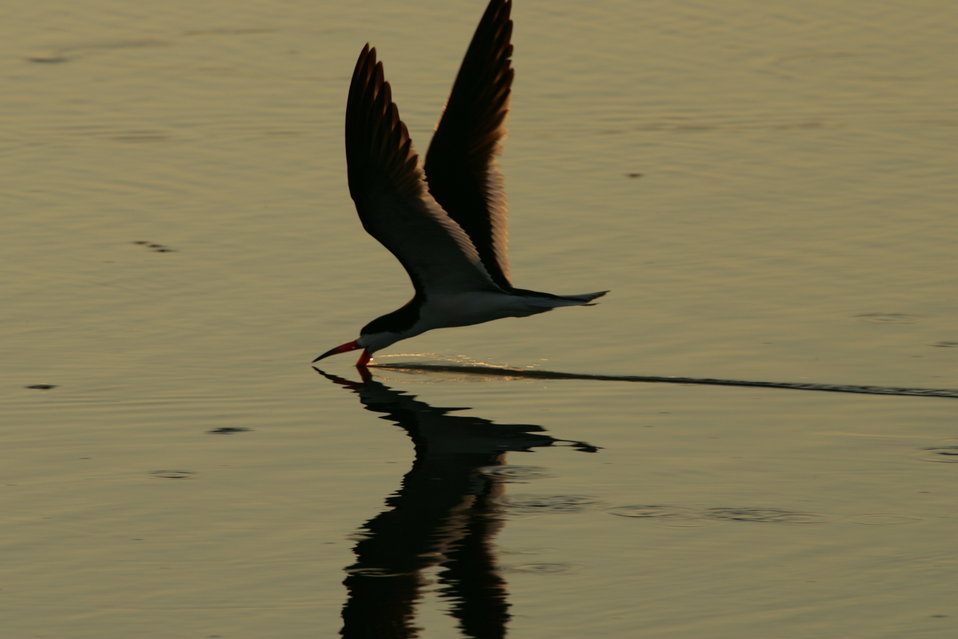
Black skimmer

Silhouette of a black skimmer.